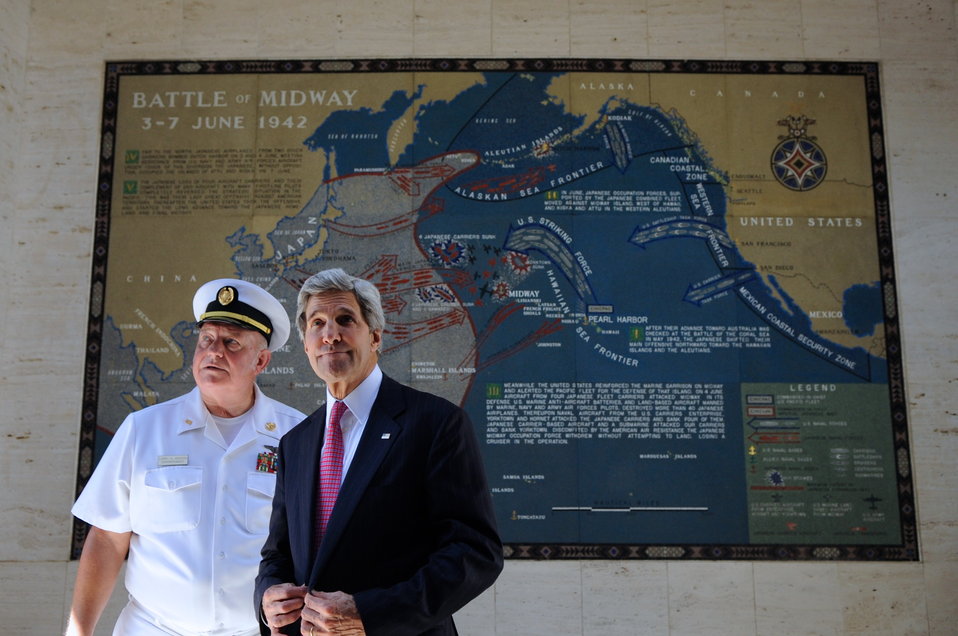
Secretary Kerry Examines a Battle Map at the Manila American Cemetery

Superintendent Larry Adkinson and U.S. Secretary of State John Kerry walk away after viewing a map of the Battle of Midway that is located at the Manila American Cemetery in the Philippines during a visit on December 17, 2013.